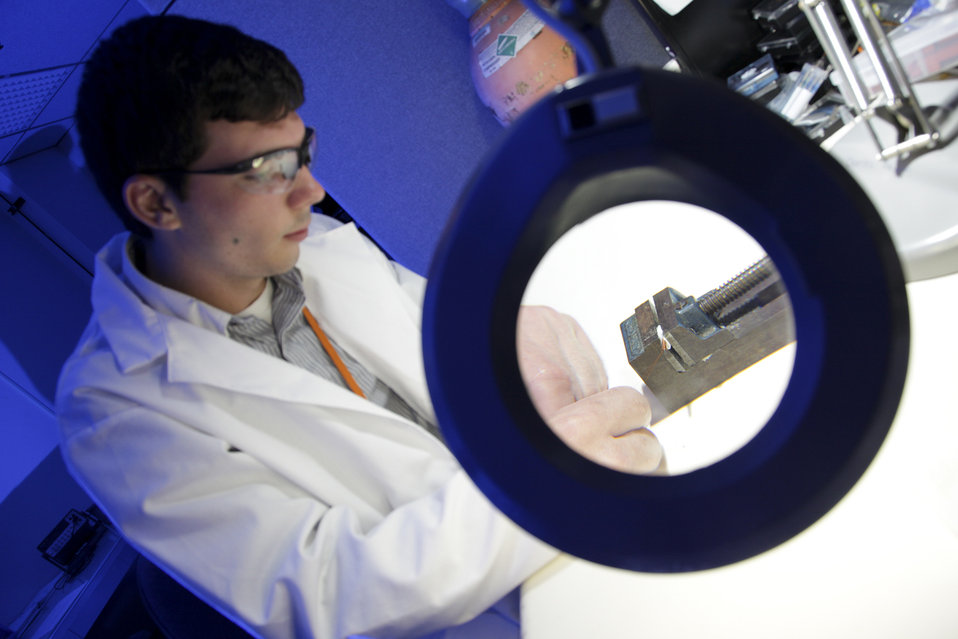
A University of Tennessee intern in Oak Ridge National Laboratory's Monolithic Systems Development Group, works on a miniaturized device for inductive power coupling to an implanted medical sensor.

This technology is expected to enable the development of miniaturized implanted systems for physiological monitoring.